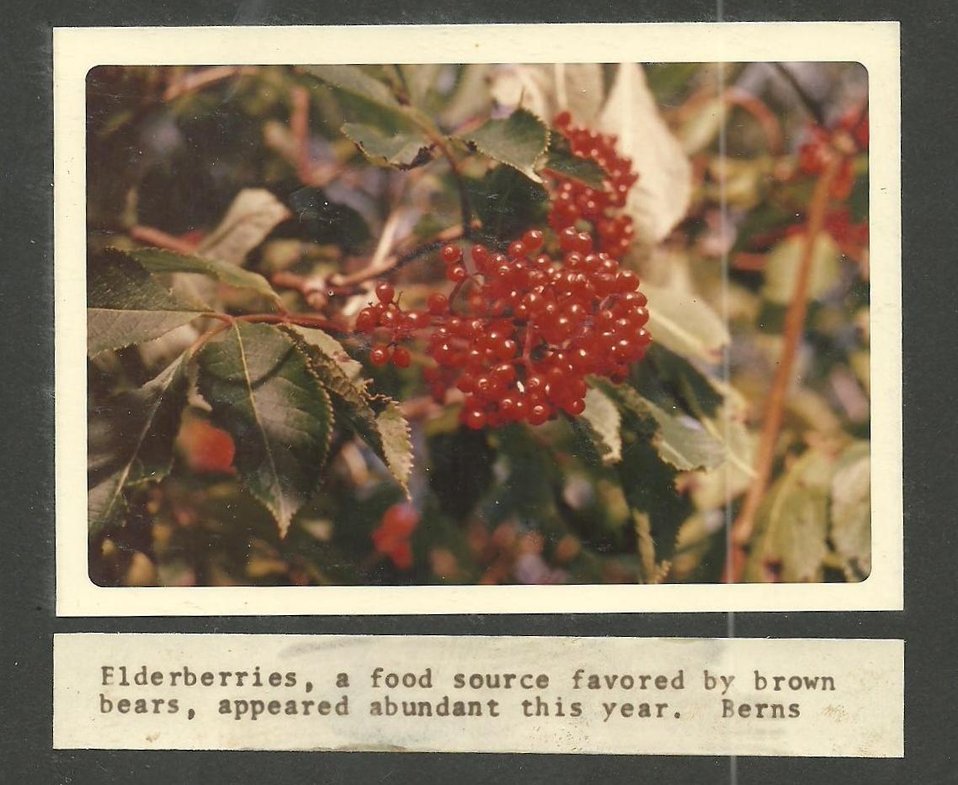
(1971) Elderberries

Credit: USFWS

Source and Contact: Kodiak National Wildlife Refuge